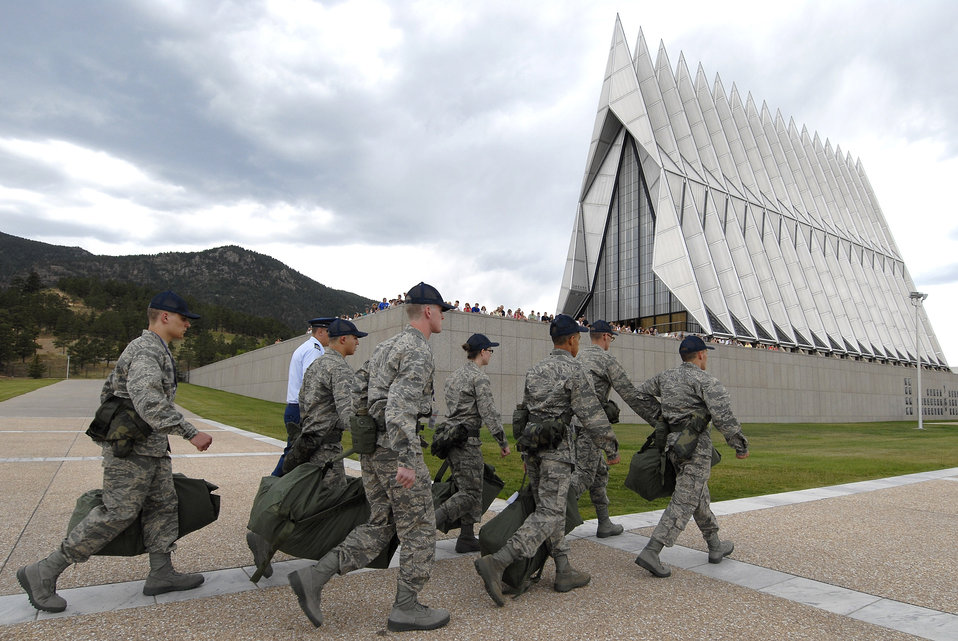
Class of 2012 Arrives

Class of 2012 basic trainees march past the Cadet Chapel on Day One of basic training June 26 at the U.S. Air Force Academy, Colo. Inprocesing marks the start of 38 days of Basic Cadet Training, which is designed to prepare basic cadet trainees for entry into the cadet wing.